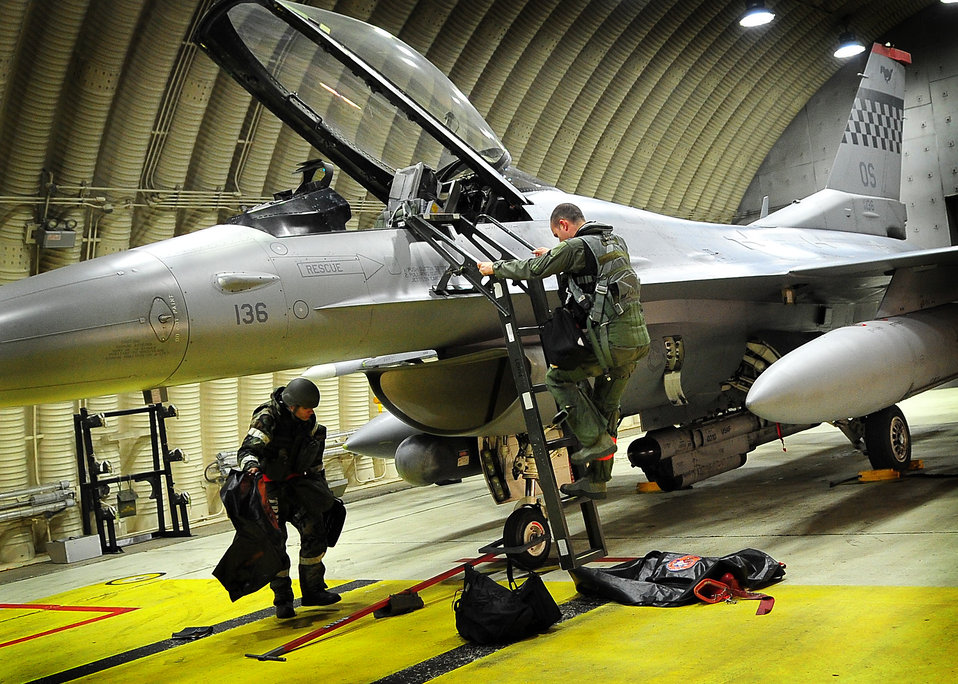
A Falcon fit to fight

A pilot from the 51st Fighter Wing climbs into an F-16 Fighting Falcon April 5, 2011, as a crew chief assists during an event that is part of an operational readiness inspection at Osan Air Base, South Korea.